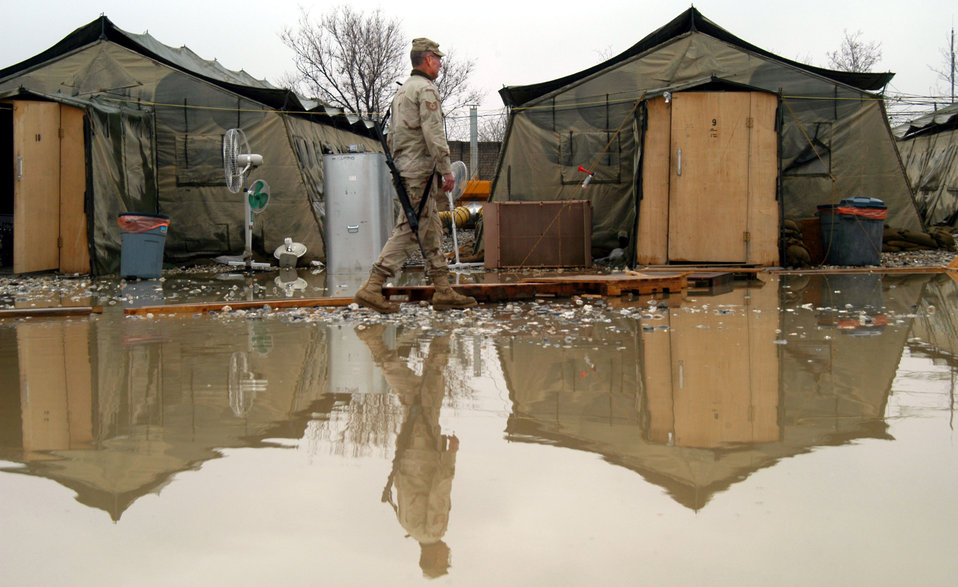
A puddle runs through it

OPERATION ENDURING FREEDOM (AFPN) -- Tech. Sgt. Ralph Zarker walks by a gigantic water puddle on the way to his tent in Air Force Village at Bagram Air Base, Afghanistan. Melting snow produced puddles throughout the base. Zarker is a security forces nightshift supervisor with the 455th Expeditionary Operations Group and is normally assigned to the 824th Security Forces Squadron at Moody Air Force Base, Ga.